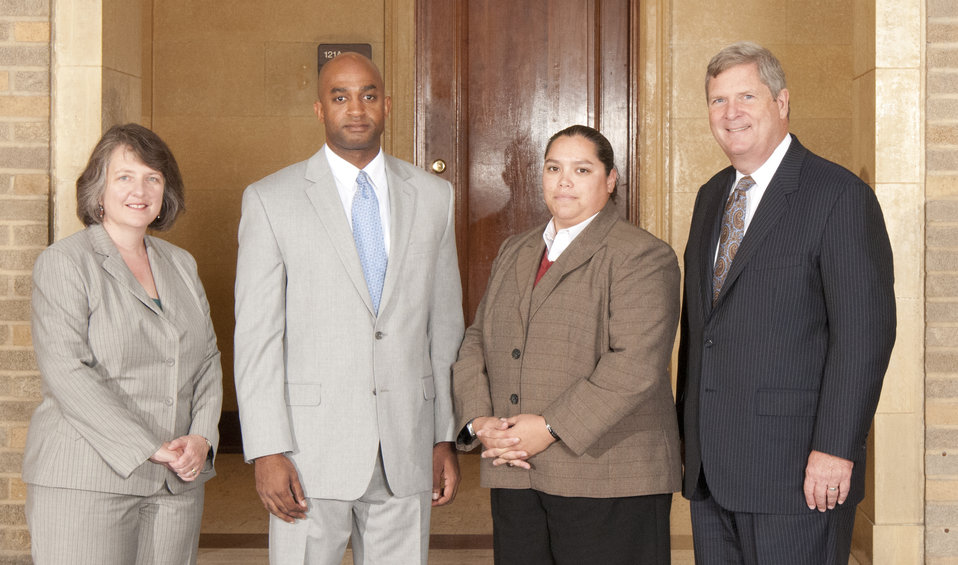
Agriculture Secretary Tom Vilsack and Deputy Agriculture Secretary Kathleen Merrigan with Honor Award Group Strategic Information Branch, Office of Homeland Security on the patio of the U.S. Department of Agriculture in Washington, D.C. on Wednesday, Sept. 12, 2012. The Strategic Information Branch innovatived implementation of a new USDA strategic information operation efficiently and effectively delivering real time data in support of critical USDA priorities.